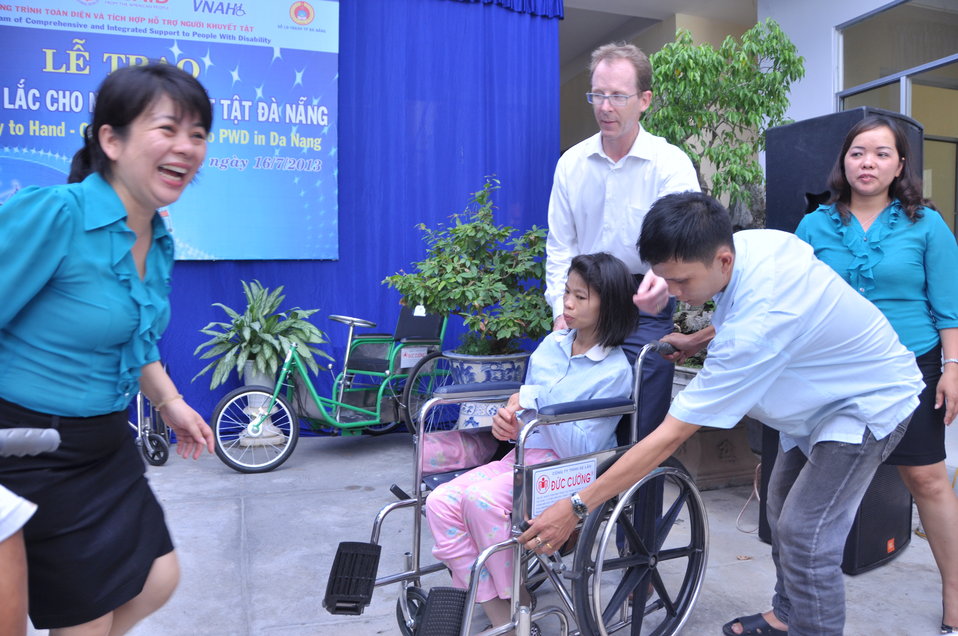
USAID Project Supports Rehabilitation Department for Children and Wheelchair Distribution in Danang

Beneficiaries in Danang, Vietnam, receive wheelchairs.